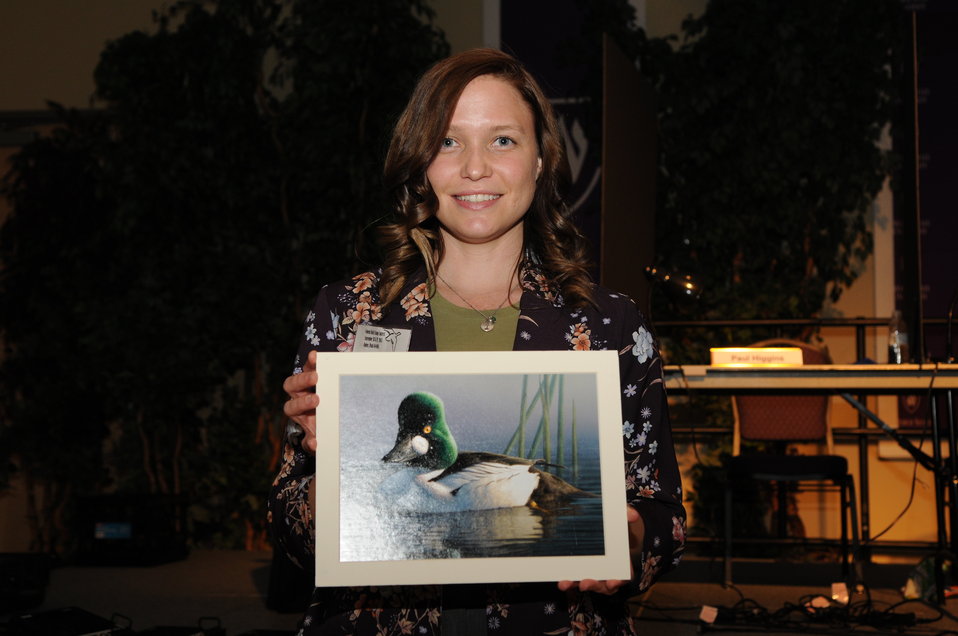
Everyone Loves a Winner

The U.S. Fish & Wildlife Service sponsored the 2012 Federal Duck Stamp Art Contest September 28 and 29 in Ogden, Utah, at Weber State University. A panel of five judges was responsible for choosing the art work used to design the 2013-2014 Migratory Bird Hunting and Conservation Stamp.